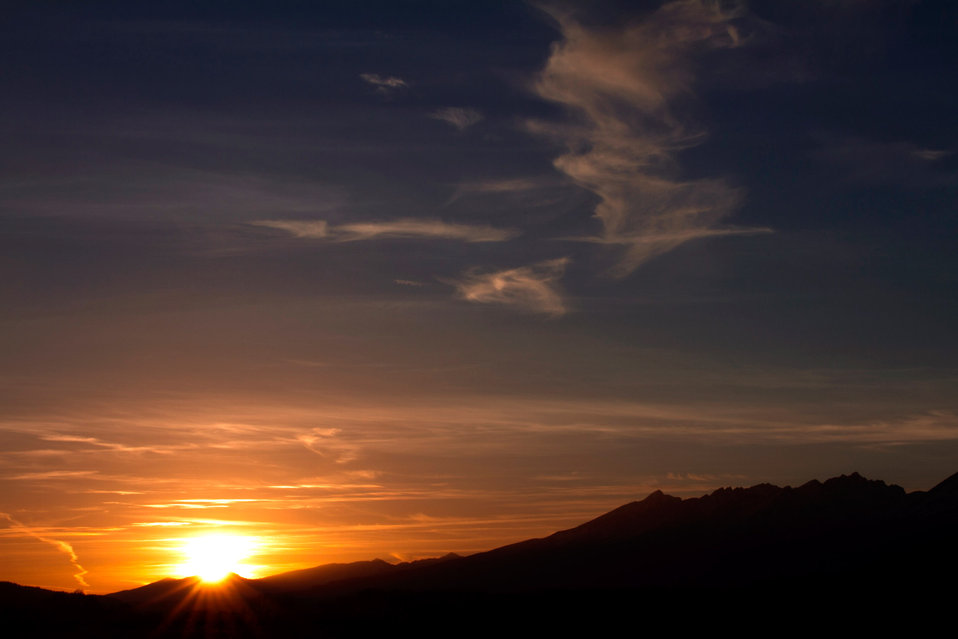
Sunset in slovakia.